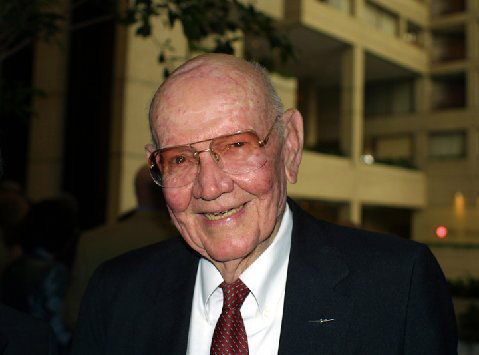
Famed Flying Tiger ace dies

Famed Flying Tigers ace and Texas Air National Guardsman Brig. Gen. David Lee